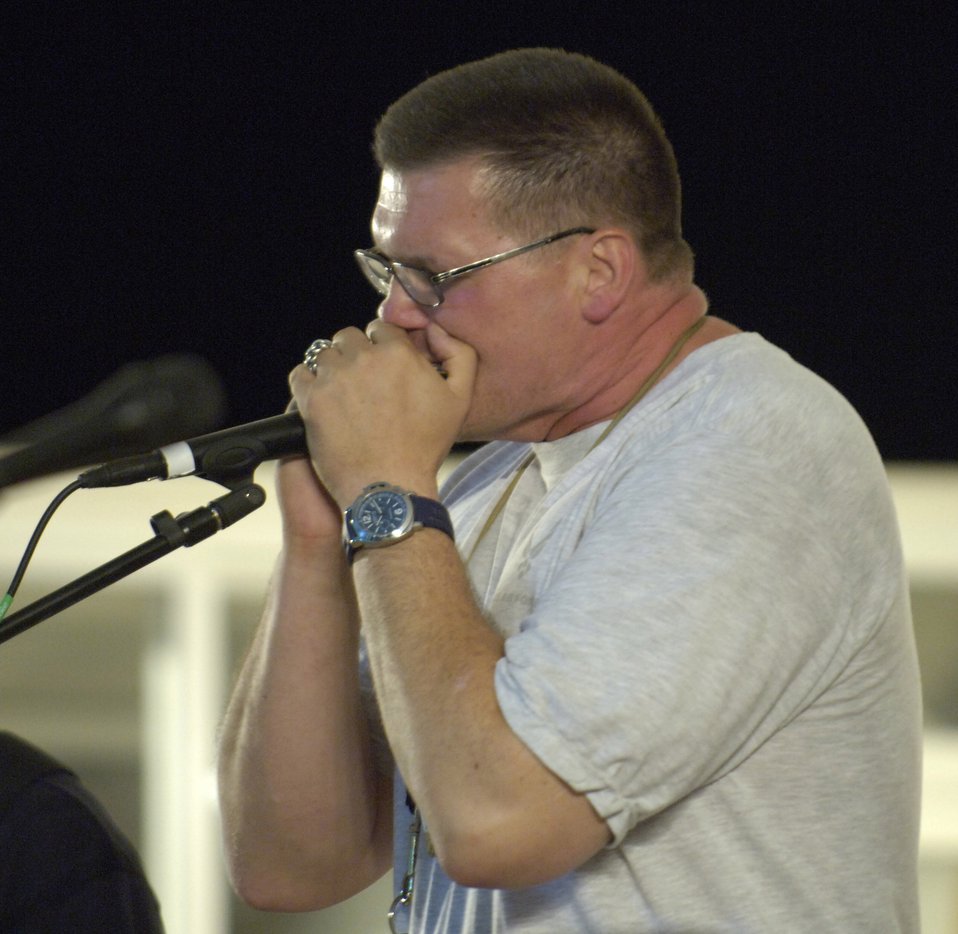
Expeditionary band performs for troops in Southwest Asia

Senior Master Sgt. Omars Blaus sits in with the band. Two U.S. Central Air Forces expeditionary bands that debuted under their new names